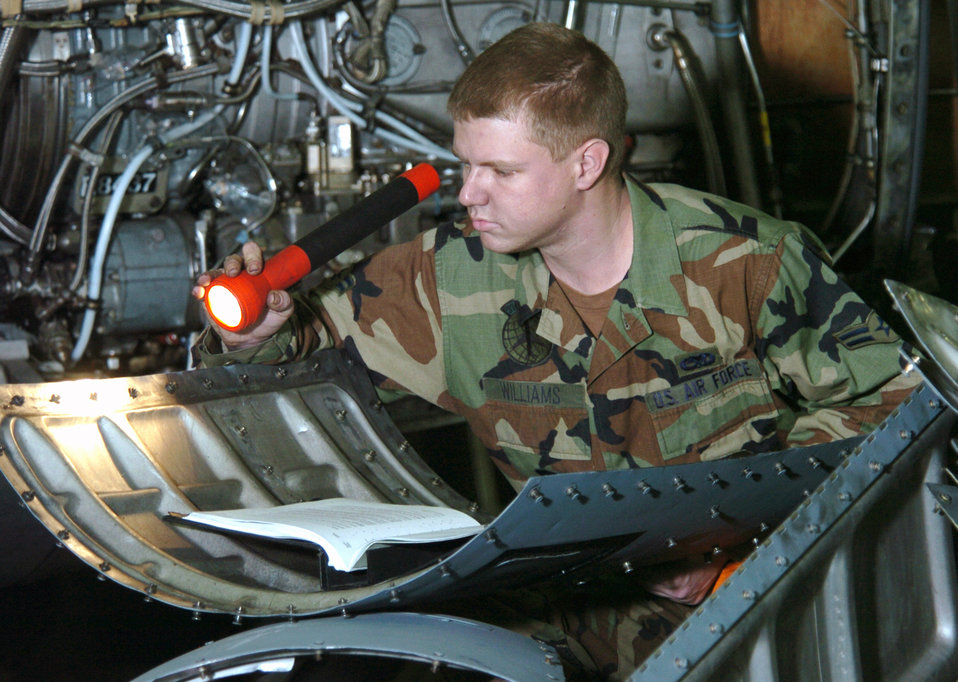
Routine checkup

YOKOTA AIR BASE, Japan -- Airman 1st Class James Williams uses a flashlight to look for cracks on C-130 Hercules engine panels during a routine inspection. Airman Williams is a mechanic from the 374th Maintenance Squadron and works at the T-56 Engine Regional Repair Center here. Center workers repair all C-130 cargo aircraft engines within Pacific Air Forces.